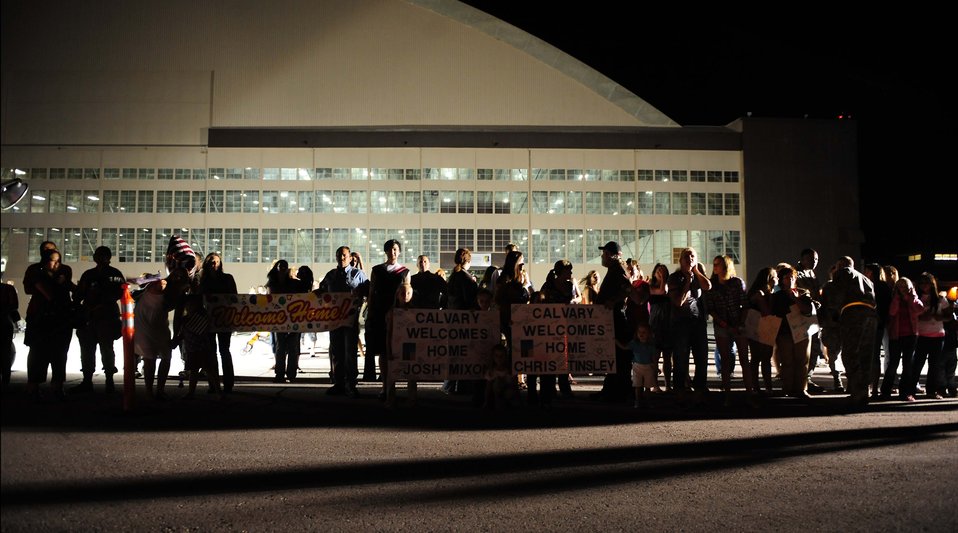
Welcome back

Later that day, more friends and family members of deployed Airmen wait for the plane to land July 28, 2010, at Ellsworth Air Force Base, S.D. More than 350 Airmen returned home after a six-month deployment to Southwest Asia in support of operations Iraqi and Enduring Freedom.